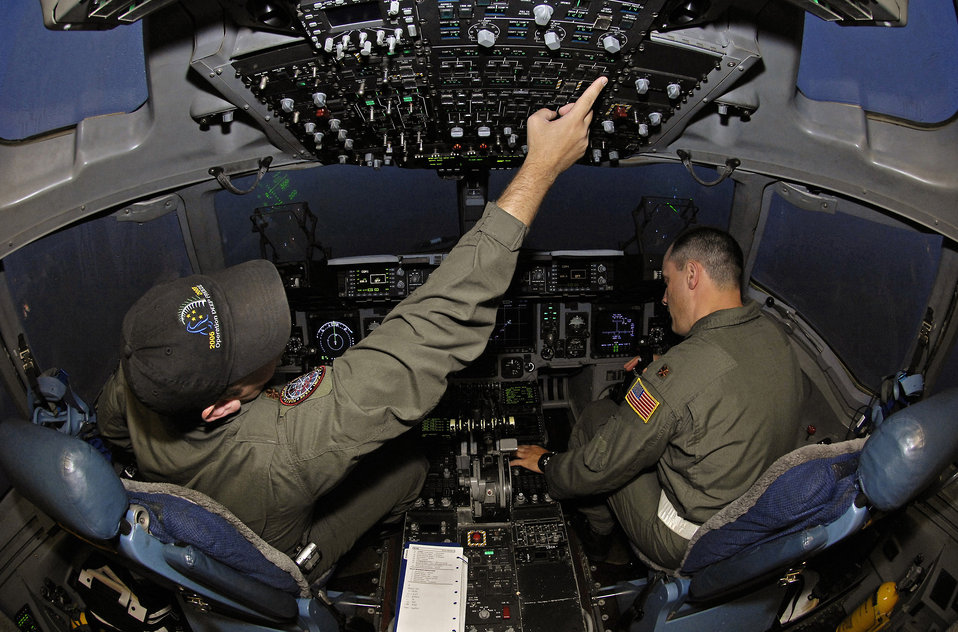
Cool delivery

Maj. Corey Simmons and Maj. Eric Von Trotha perform preflight procedures on a C-17 Globemaster III Sept. 10 at Christchurch International Airport, New Zealand. The aircrew took approximately 60,000 pounds of supplies to Antarctica as part of Joint Task Force Support Forces Antarctica, headquartered at Hickam Air Force Base, Hawaii, and led by 13th Air Force. The joint task force is currently conducting Operation Deep Freeze in support of the National Science Foundation and U.S. Antarctic Program. Major Simmons is an active duty evaluator pilot with the 62nd Operations Support Squadron at McChord AFB, Wash., and Major Von Trotha is a Reserve evaluator pilot with the 313th Airlift Squadron, also at McChord AFB.